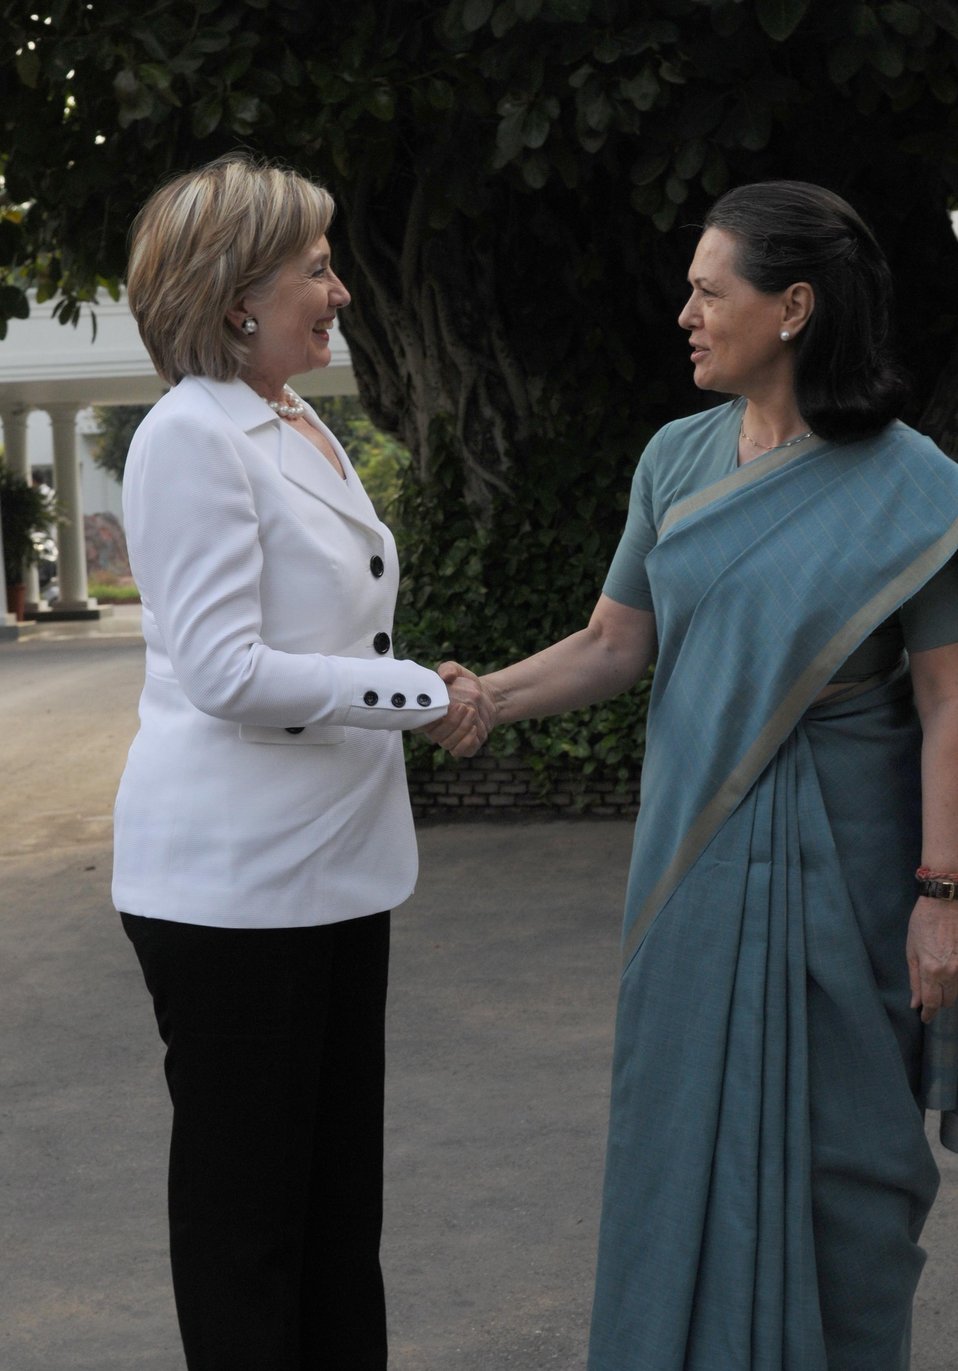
Secretary Clinton Meets With Indian Congress Party President

President of the Indian Congress Party Sonia Gandhi welcomes U.S. Secretary of State Hillary Rodham Clinton to her residence in New Delhi, India July 29, 2009.